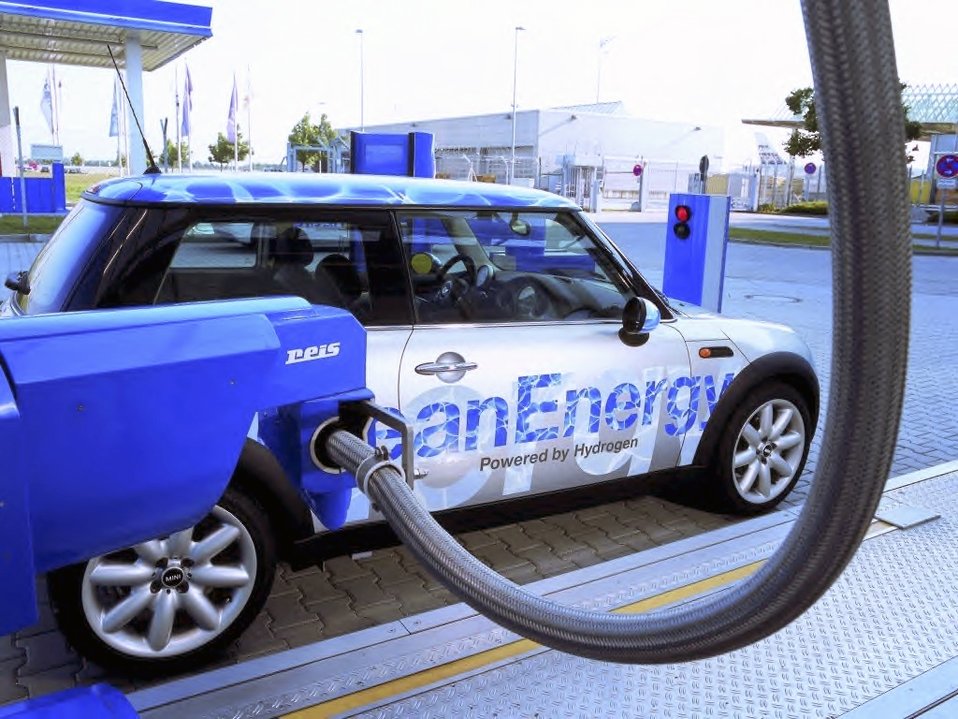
Research at Argonne National Laboratory developed a process to improve the efficiency of producing hydrogen to run cars such as the prototype shown, which was developed at Oak Ridge National Laboratory.